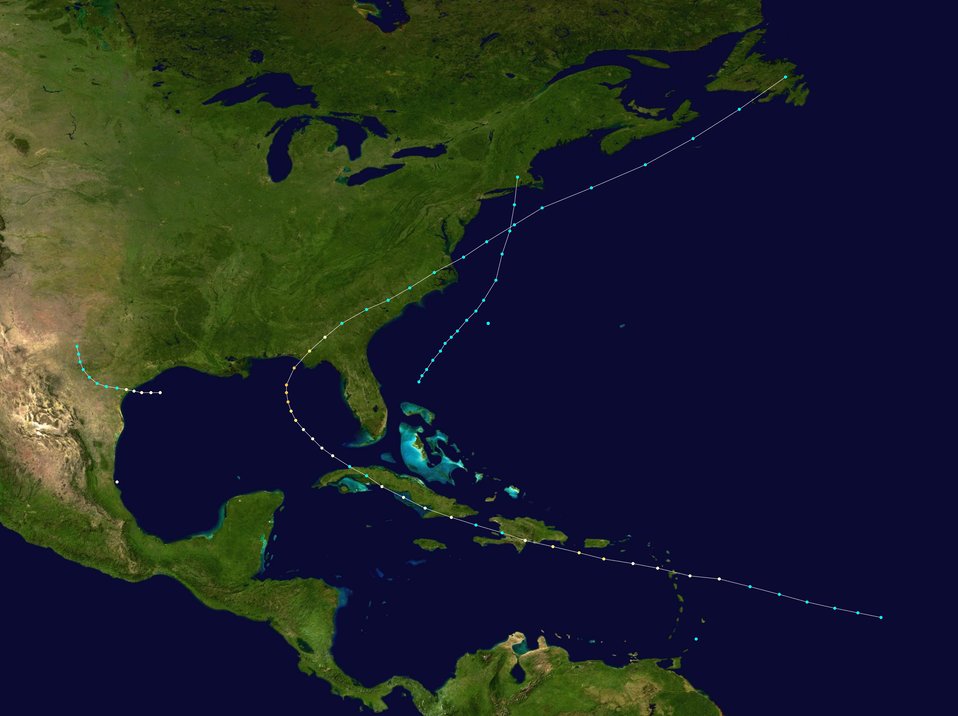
1851 Atlantic hurricane season summary